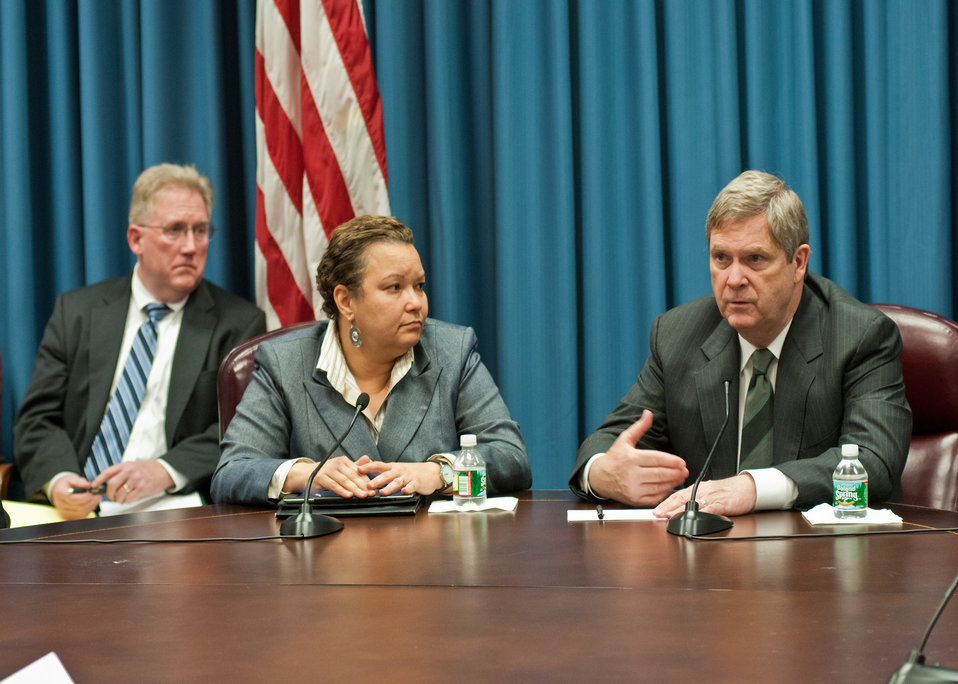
From left: Larry Elworth, Special Advisor on Agriculture to Environmental Protection Agency Administrator Lisa Jackson, Lisa Jackson, Administrator, Environmental Protection Agency and Agriculture Secretary Tom Vilsack. Secretary Vilsack and Administrator Jackson met with commodity groups representing all aspects of agriculture met at the United States Department of Agriculture in Washington, D.C., to discuss mutual agricultural and environmental issues on Tuesday, December 14, 2011.